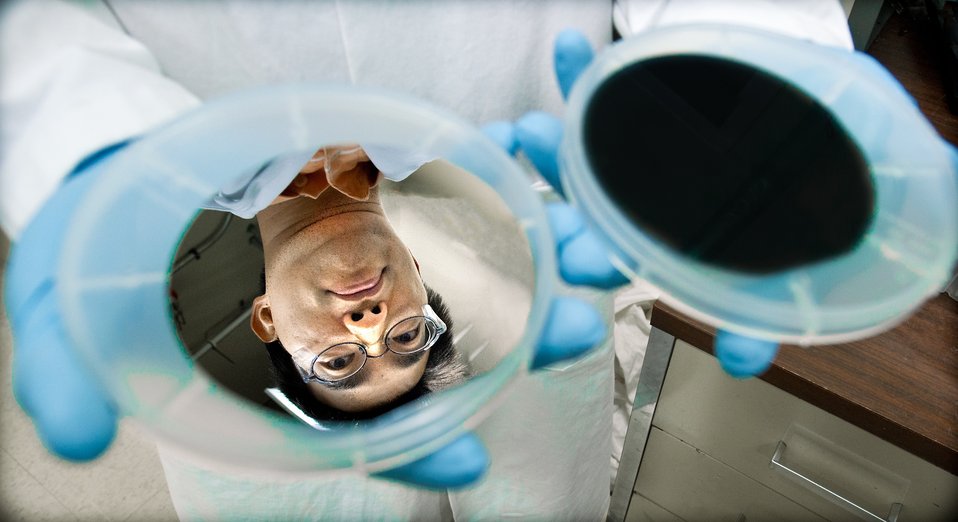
Black Silicon, Hao-Chih Yaun, SERF

A silver, silicone wafer reflects the face of NREL research scientist Hao-Chih Yuan. He is working in a lab at the Solar Energy Research Facility.